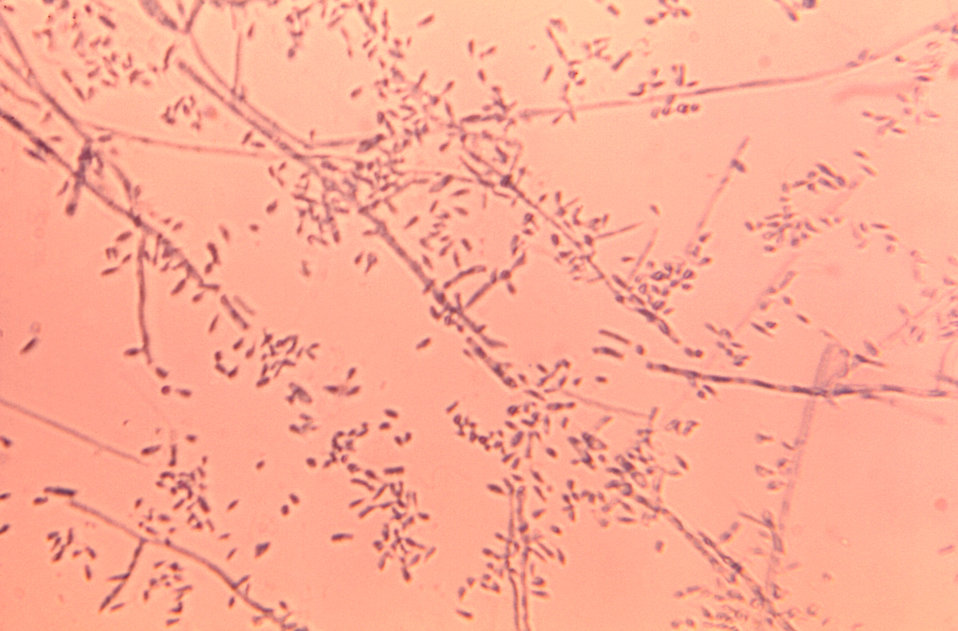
Cultivated on a medium of thiamine agar, this photomicrograph revealed some of the ultrastructural morphology displayed by the dermatophytic fungus, Trichophyton verrucosum. In particular, you'll note the presence of numerous oblong-shaped microconidia, which are the organism's reproductive spores, and diaphanous, threadlike hyphal filaments.